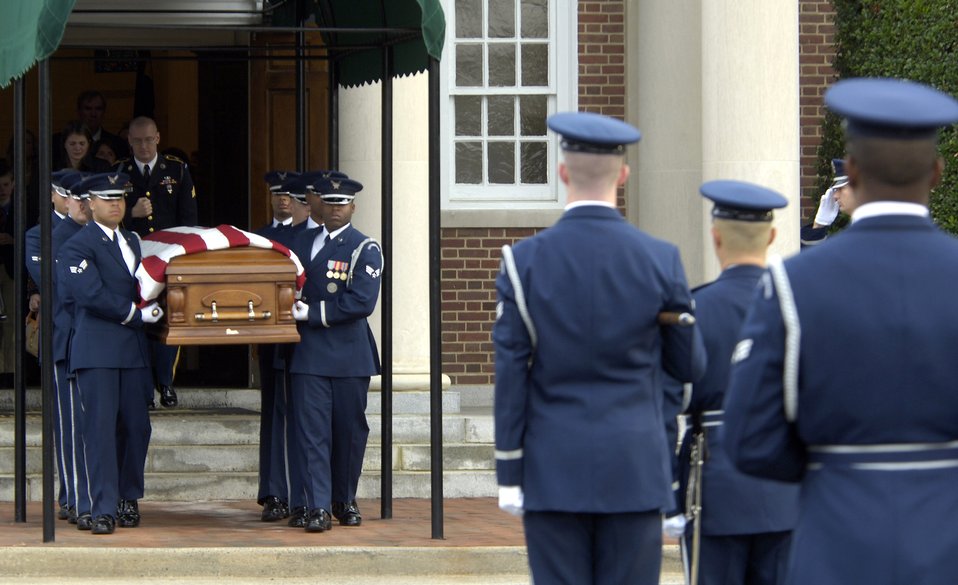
Honor guard transitions to new funeral guidelines

Members of the Air Force Honor Guard conduct a military honors funeral ceremony Nov. 1 for retired Lt. Gen. Marvin McNickle at Arlington National Cemetery, Washington, D.C. Honor guards across the Air Force will change the way they perform retiree funerals due to manpower cuts starting Nov. 1.